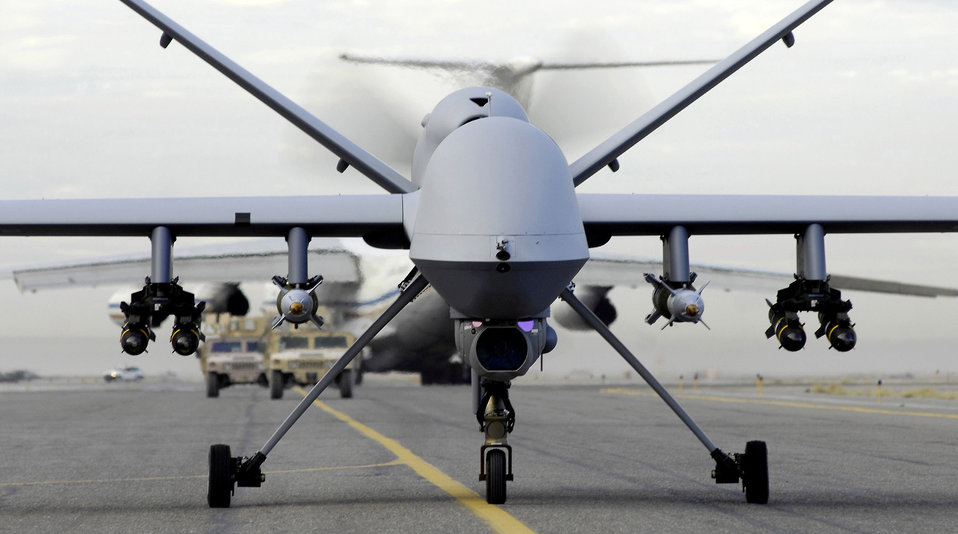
Airmen support new Hollywood movie 'Eagle Eye'

An MQ-9 Reaper, like the one pictured here, is featured in the movie